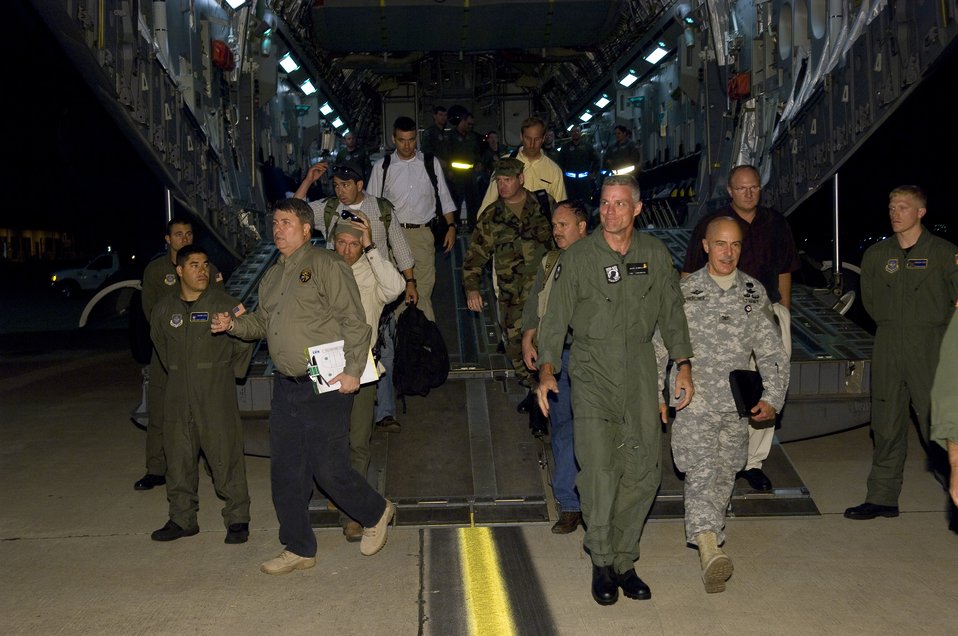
Hostages Arrive in U.S.

Keith Stansell steps off the ramp of a C-17 Globemaster III onto U.S. soil at Lackland Air Force Base, Texas, July 2. The contractor was one of three Americans rescued after being held hostage by the Revolutionary Armed Forces of Colombia for five years.